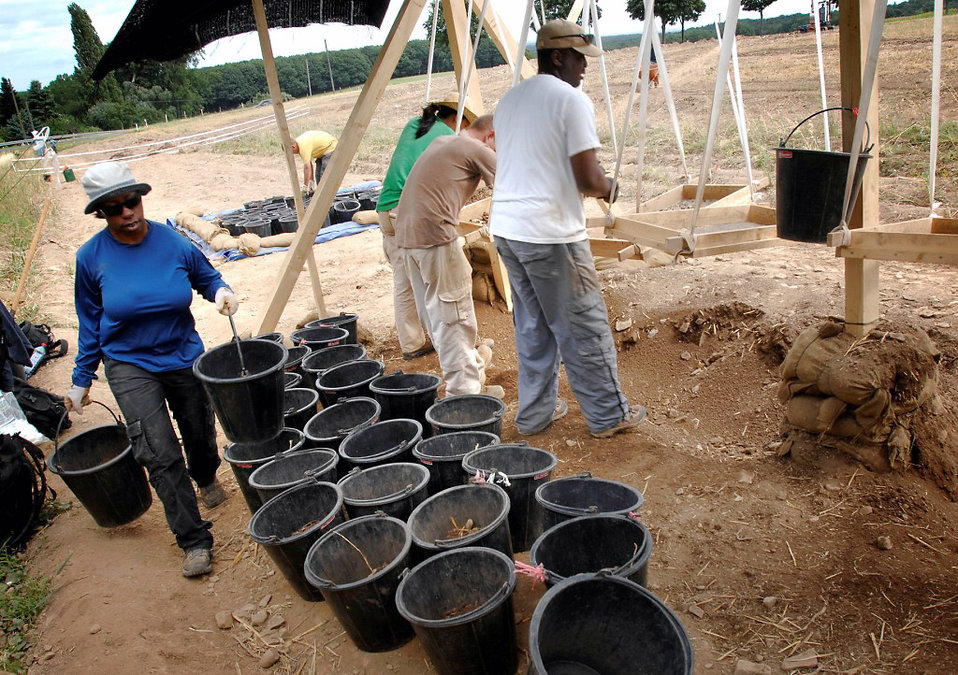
JPAC teams serve on front lines of recoveries

Tech. Sgt. Valda Wilson hauls buckets of dirt to the screening station so that it can be filtered for human remains as well as other evidence that would lead to the identification of a missing servicemember. Sergeant Wilson is an Air Force photographer.